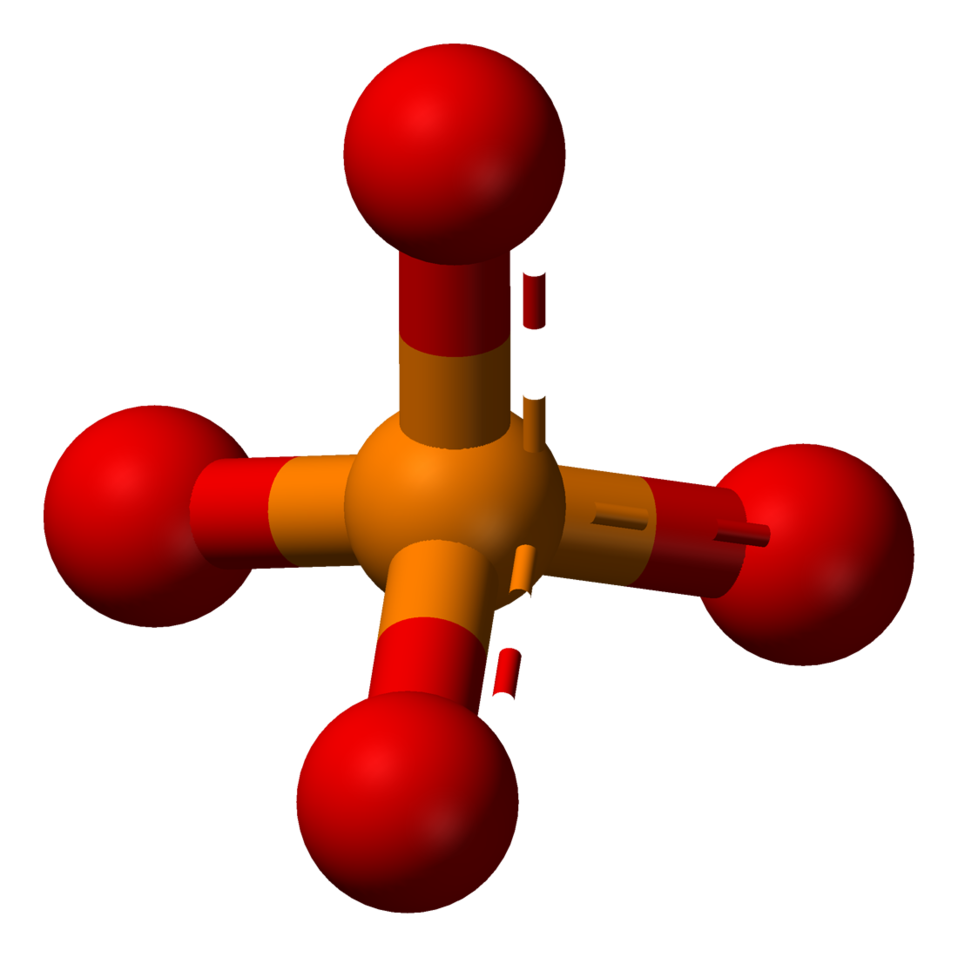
0-phosphate-3D-balls